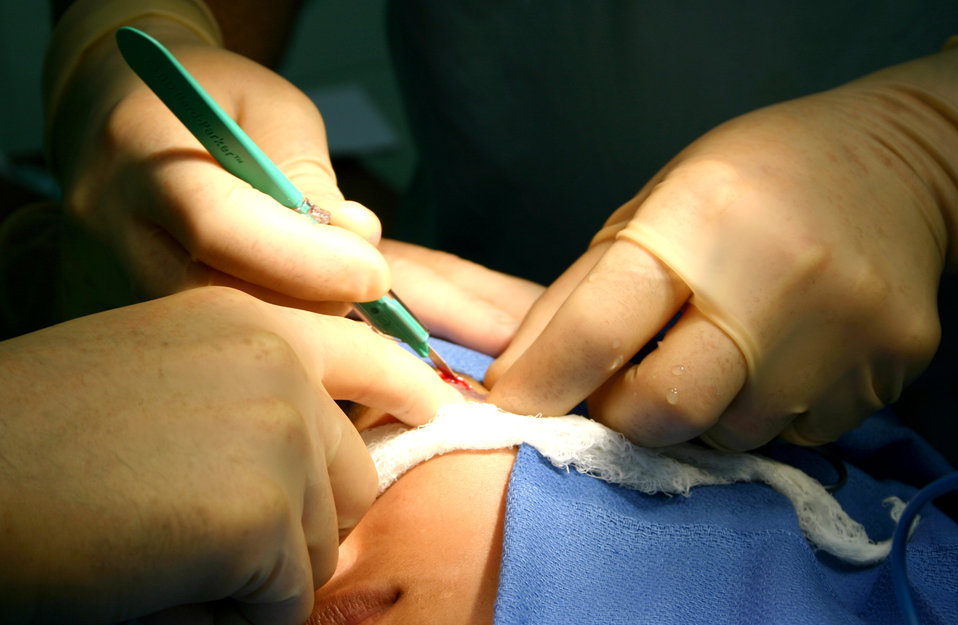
Medical team conducts mission in Ecuador

Maj. (Dr.) Matthew Talarczyk performs a scar revision procedure on a 15-year-old girl in Esmereldas, Ecuador, as part of a Medical Readiness Training Exercise. Major Talarczyk is the team leader for the six-person medical crew from Wilford Hall Medical Center at Lackland Air Force Base, Texas, and from Keesler AFB, Miss.